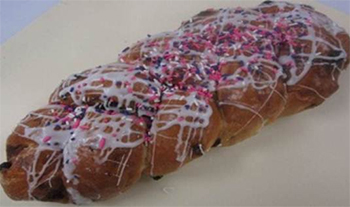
RECALLED – Easter Bread

April 21, 2014 – Product Recall – Wegmans Food Markets, Inc. Issues Allergy Alert on Undeclared Egg in Wegmans Easter Bread, 17 oz..